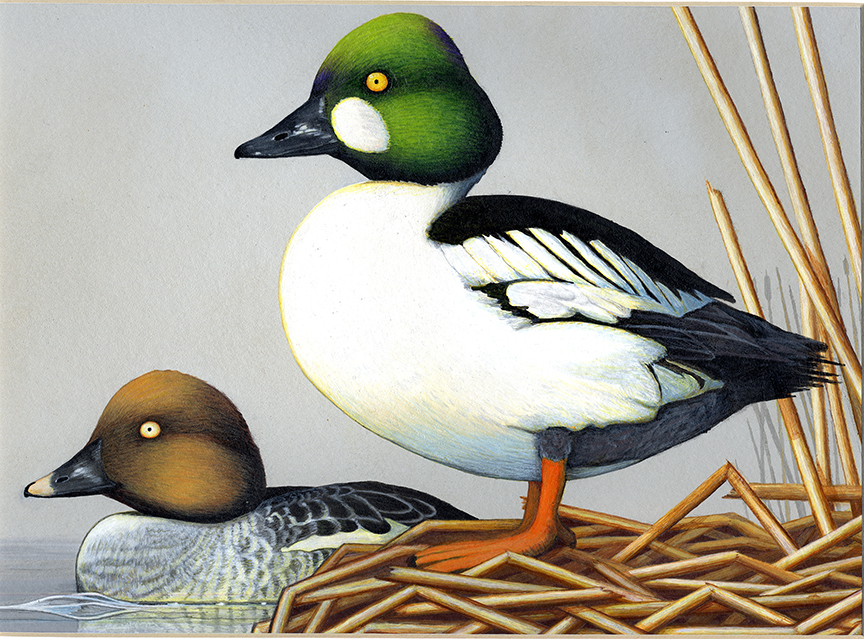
JRDuck2013AL

2013 Junior Duck Stamp Best of Show-Alabama